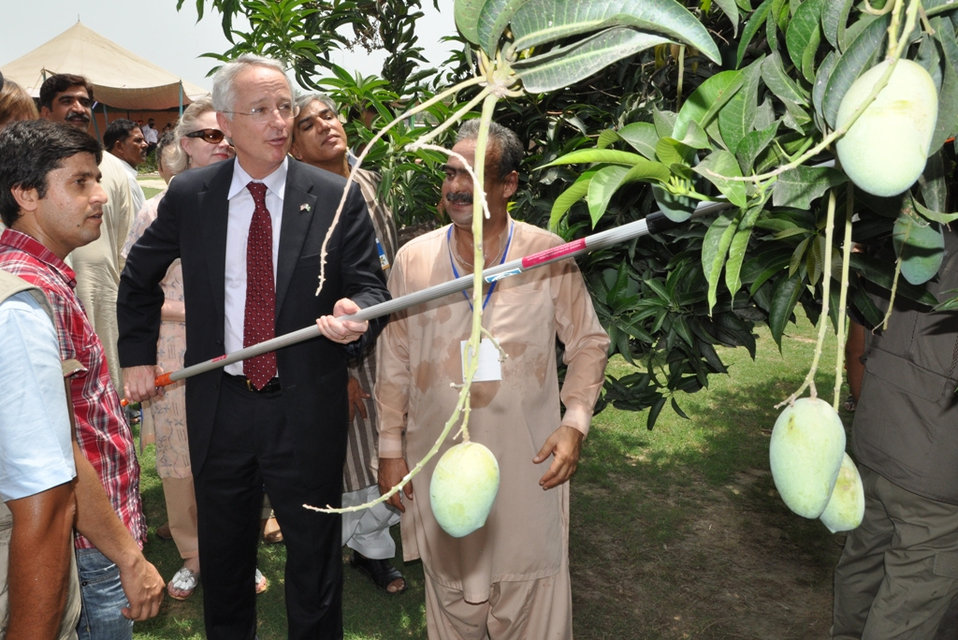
U.S. Helps Pakistani Farmers Export Mangos

Multan, July 24, 2011 - U.S. Ambassador Cameron Munter inaugurated a new U.S.-funded mango processing line at Lutfabad Farm. As a result of U.S-provided infrastructure upgrades, 13 farms in Southern Punjab will be able to export delicious Pakistani mangos to foreign markets. The U.S. partnership with mango producers is expected to yield a 30 million dollar increase in mango export revenue in the next two years, three million dollars of new investment, and 6,000 new jobs in Punjab and Sindh.